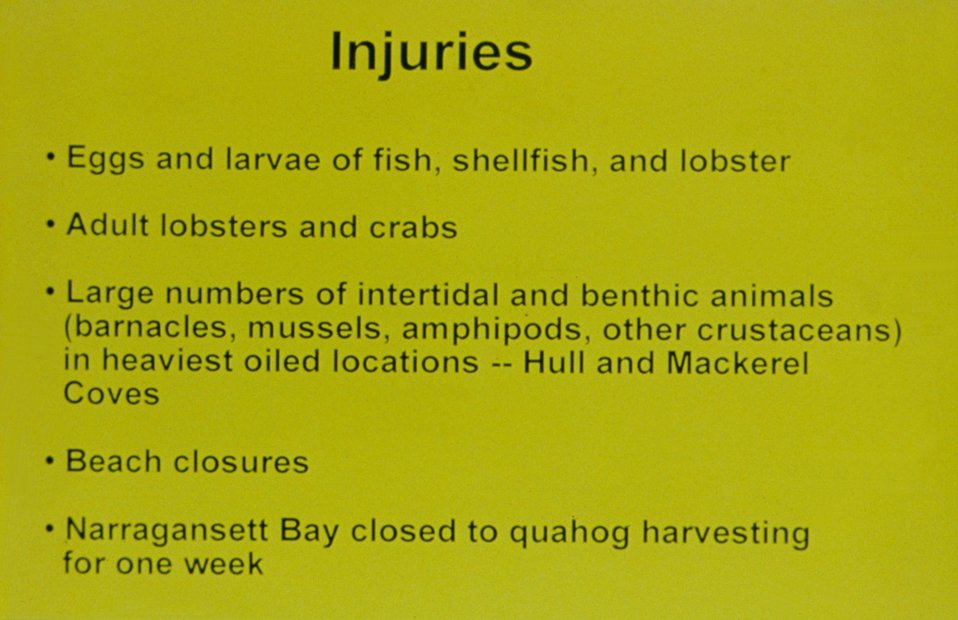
A slide depicting the resources injured during the oil spill.